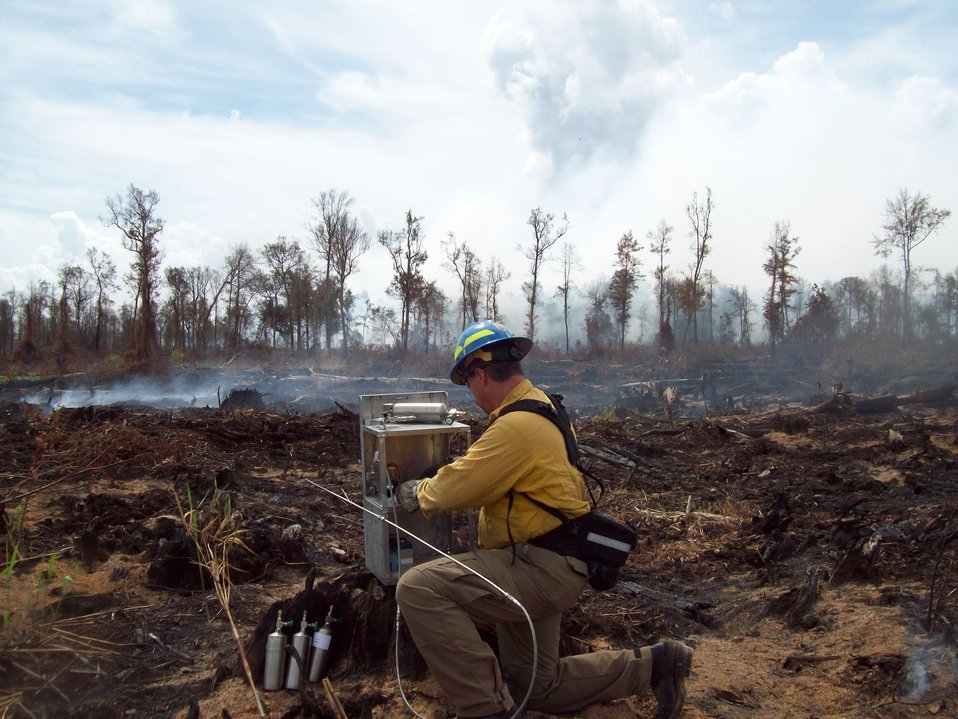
Smoke signature

Suffolk, VA, August, 2011: Mike Dueitt, Incident Commander of the Southern Area Type 2 Incident Management Team, collects a sample of peat smoke at the Lateral West Fire burning on Great Dismal Swamp National Wildlife Refuge. Dueitt helped Dr. Amber Soja of NASA's Langley Research Center gather data on the composition of peat smoke. Soja said, 'We have never been able to collect emissions from this type of source and these data will truly be valuable to both scientists and air quality managers.'